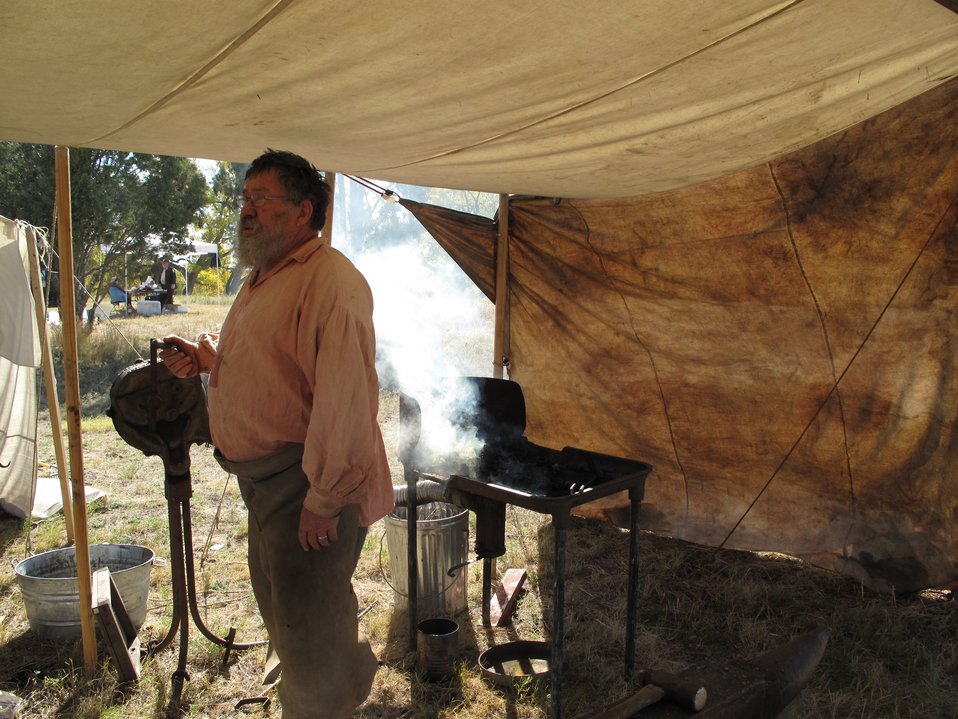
Colonial Style

Metal workers, using authentic tools to shape hammers and stakes.